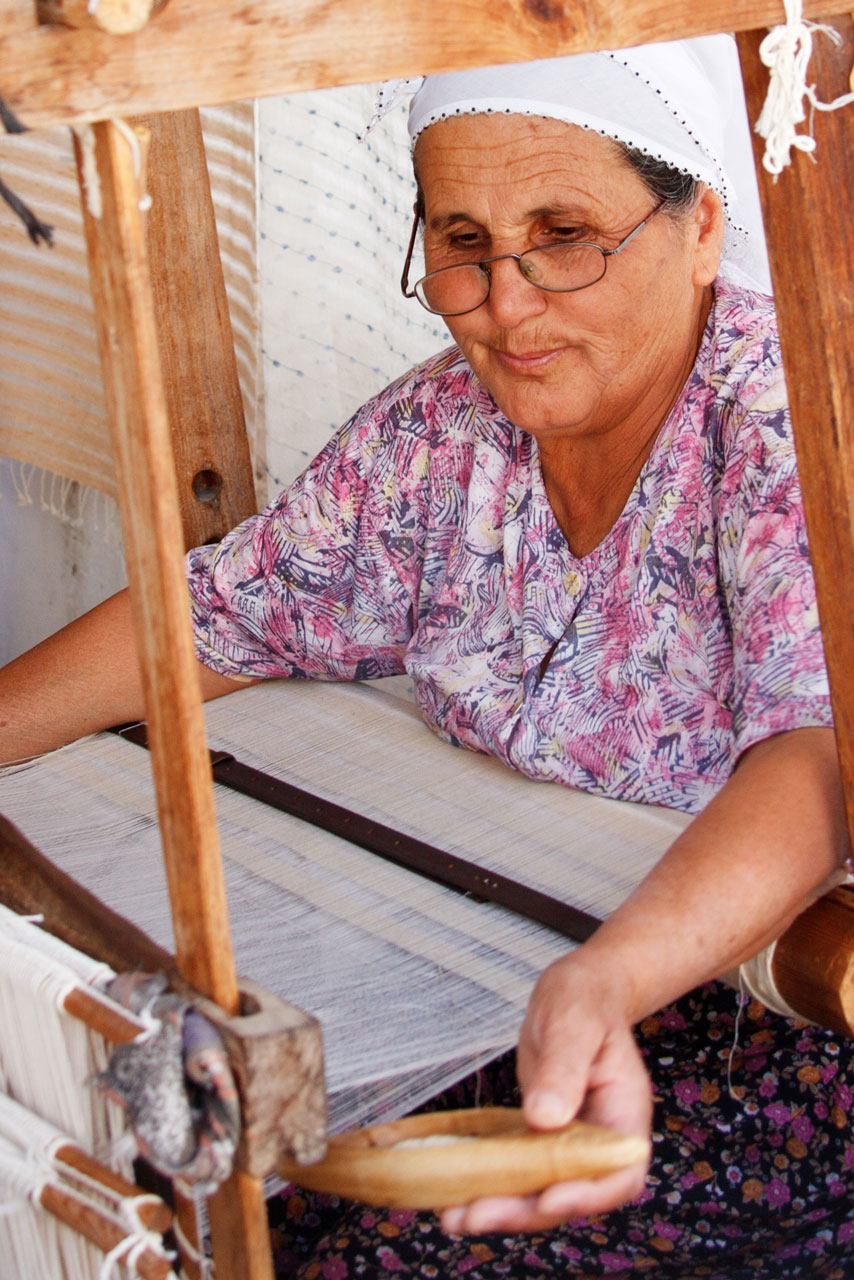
Woman weaving

An older woman weaving.